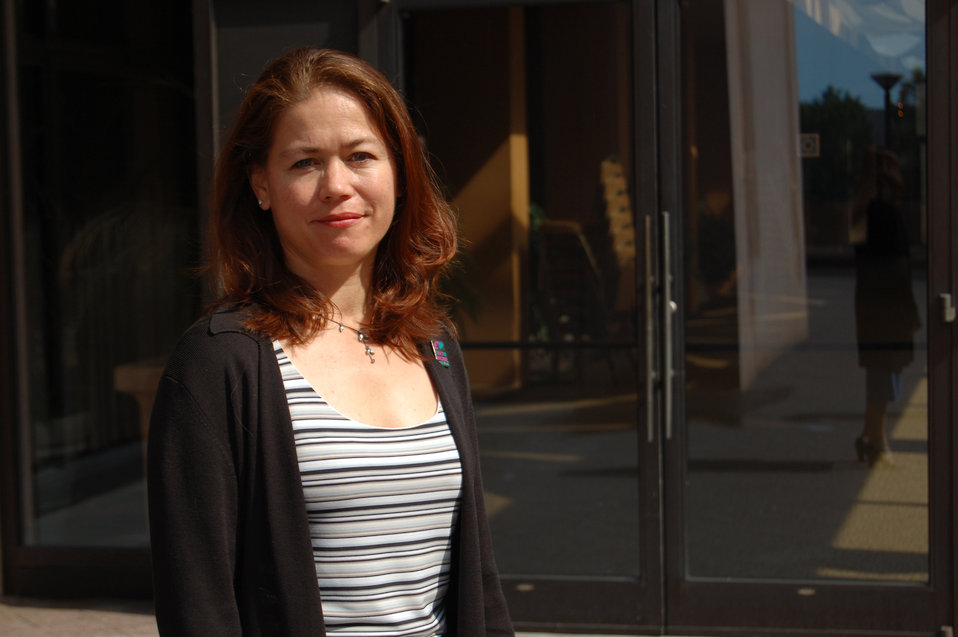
PACHA conf050